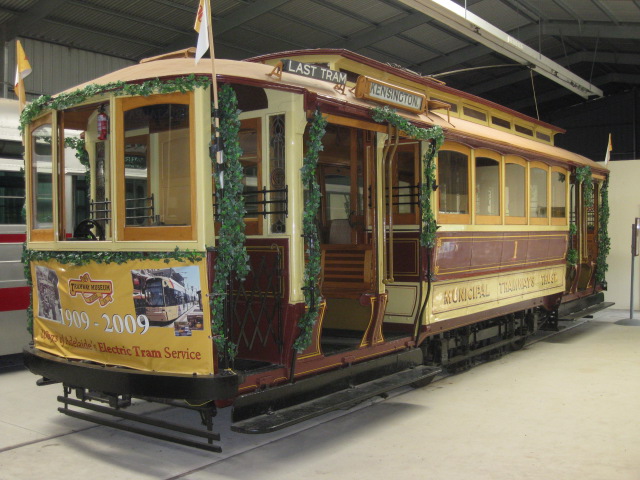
'D' type tram at the Adelaide Tram Museum